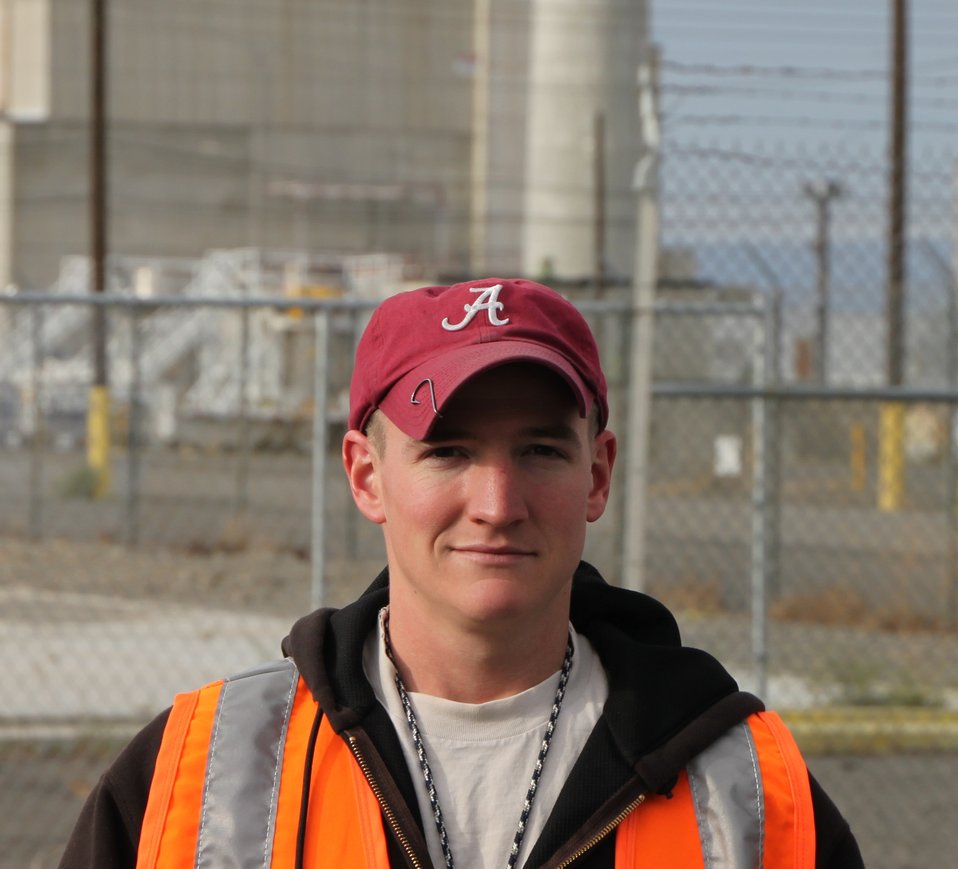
Ty Rose

When Ty Rose, a platoon commander with the U.S. Marine Corps, finished his tour in Iraq and returned from the service in 2008, he found himself out of work. Ty attended a Service Academy Career Conference in May 2009 at Washington D.C., where he met with representatives from CH2M HILL Plateau Remediation Company and was offered a job on the spot as a field work supervisor at the Hanford Site in Washington State. “Recovery Act funds have put me in a job, it’s taking care of my family, and it’s giving hope'.